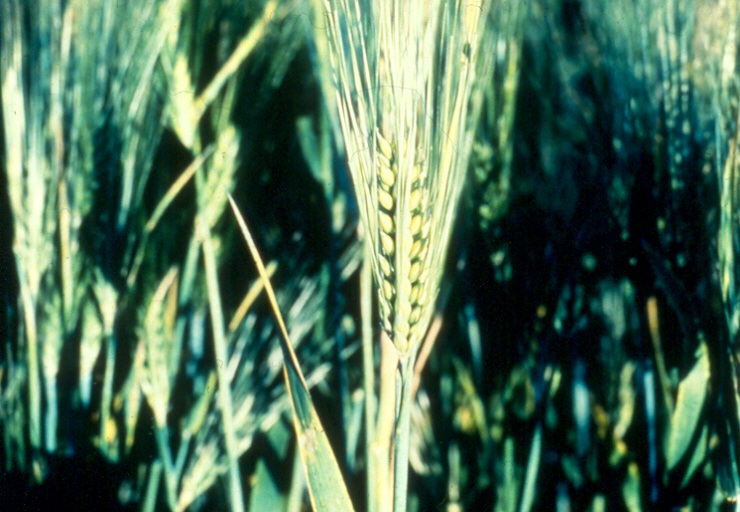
Mature Wheat Salmon FIeld Office UCSC Upper Columbia Salmon Clearwater District